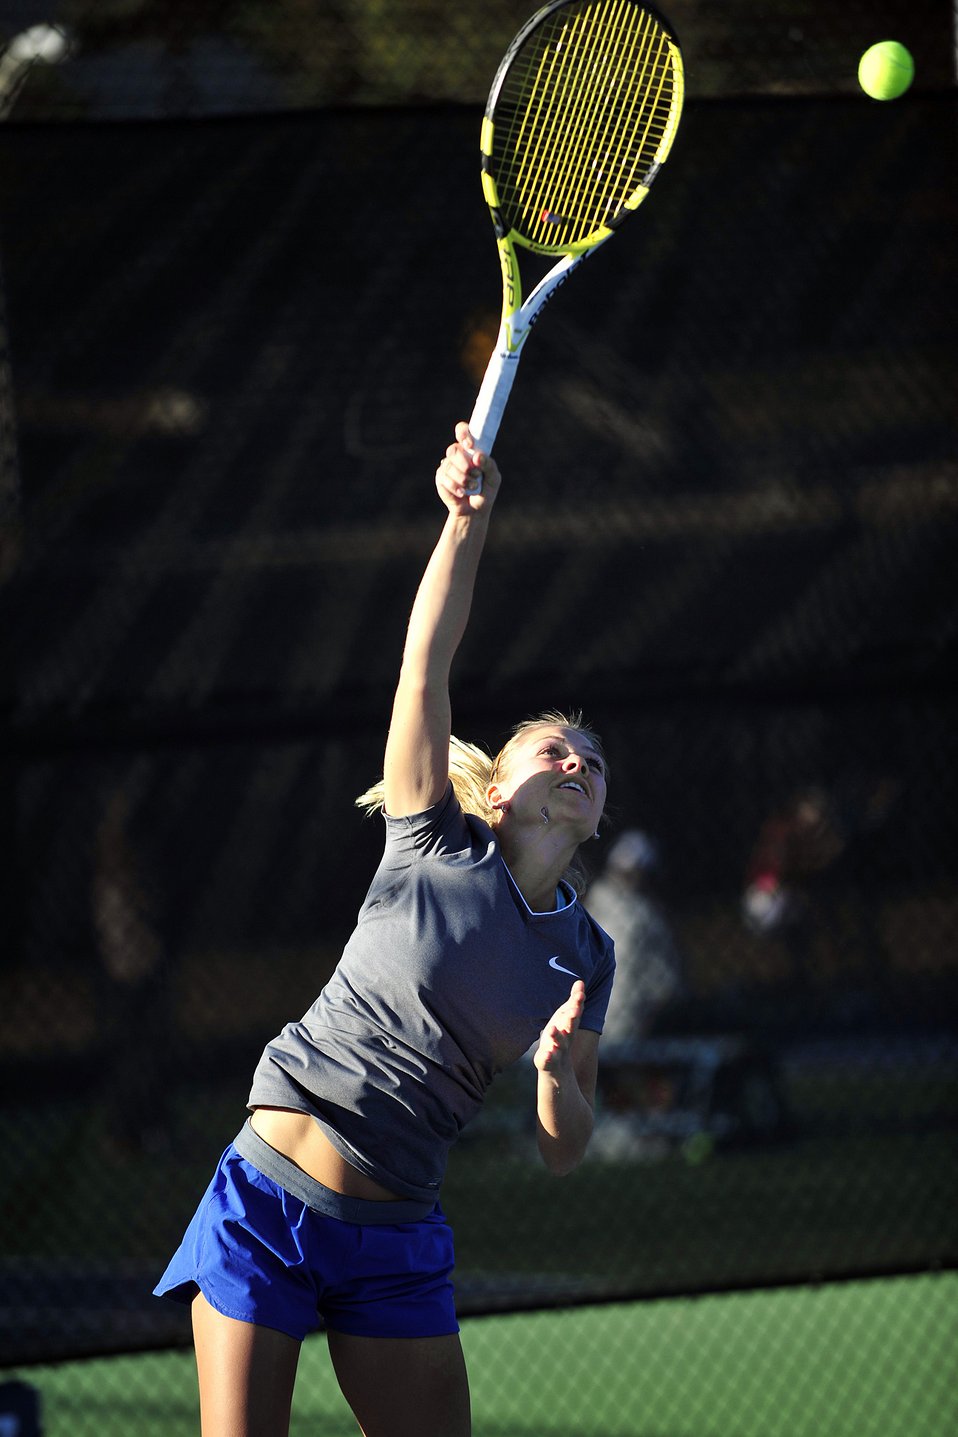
Cadets compete in tennis tournament

Falcons junior Tahlia Smoke serves the ball during the